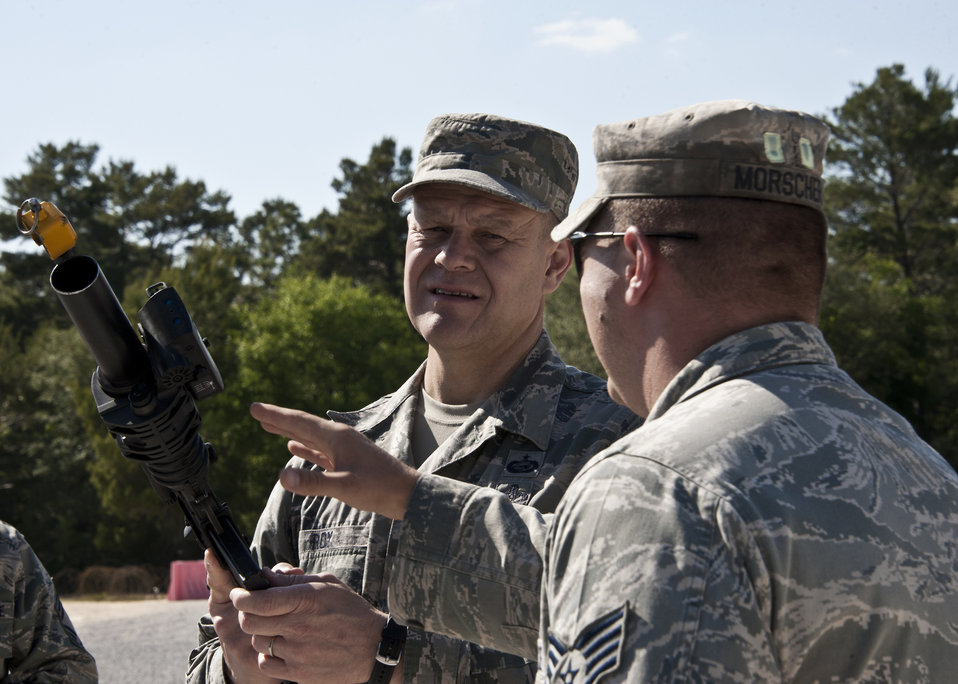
Brave Defender

Staff Sgt. Ivan Morscher briefs Chief Master Sgt. of the Air Force James A. Roy on an M-4 carbine rifle during his tour of Air Force Materiel Command's